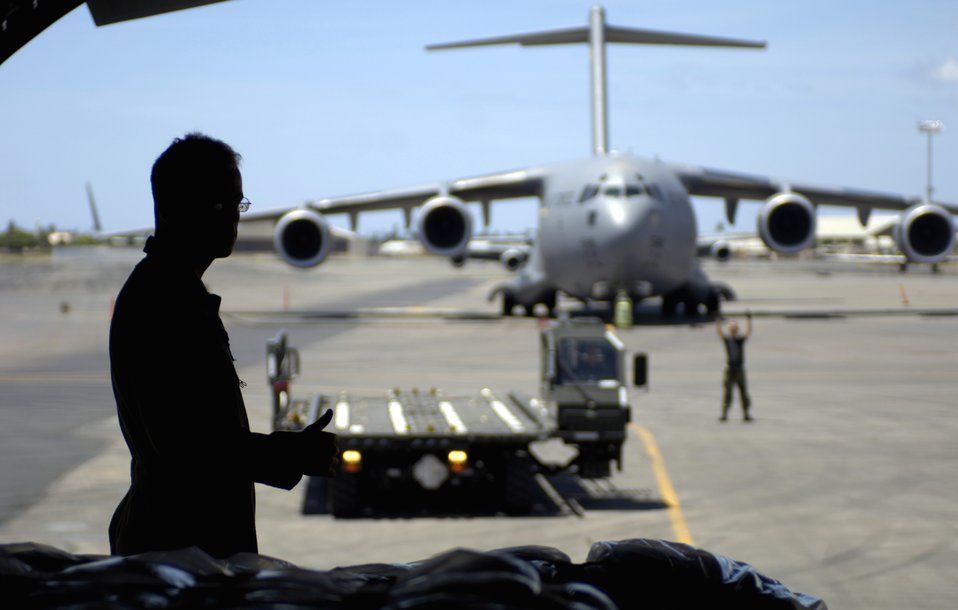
First look at Wake: Less damage than feared

Airman 1st Class Charles Gibb gives a thumbs up after completing a cargo upload at Hickam Air Force Base, Hawaii, Sept. 12. Airman Gibb is a C-17 Globemaster III loadmaster from the 535th Airlift Squadron. The C-17 took a 53-person team comprised of civil engineers, Defense Department employees and contractors to assess damage left by Super Typhoon Ioke after it struck Wake Island Aug. 31.